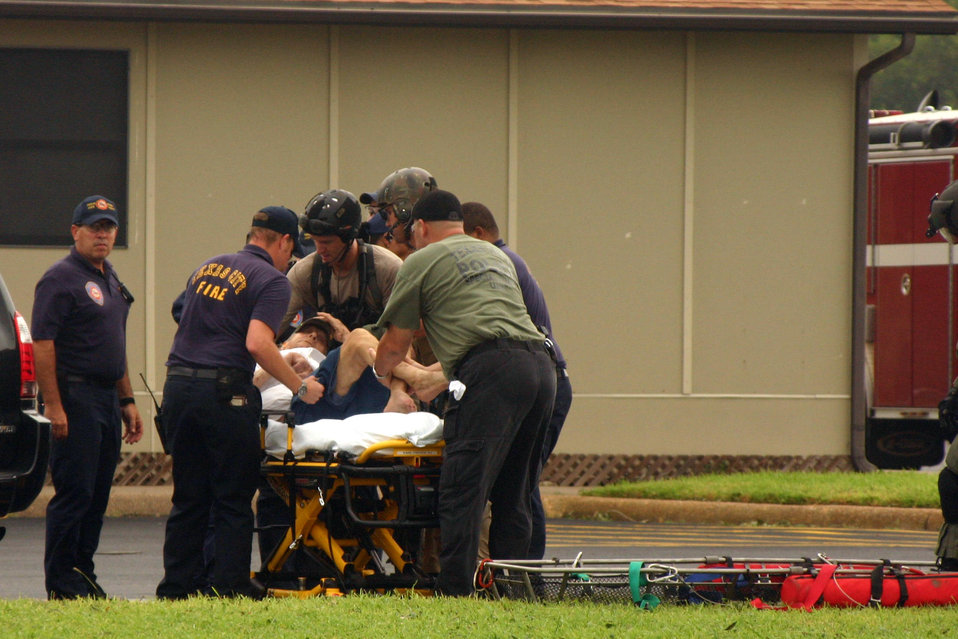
Helicopter aircrews rescue hurricane victims

Joint Task Force-129 pararescuemen transfer a rescued hurricane victim to Texas firefighters Sept. 13 near Galveston, Texas. The JTF-129 crews rescued 48 people and pets stranded in the Galveston area.